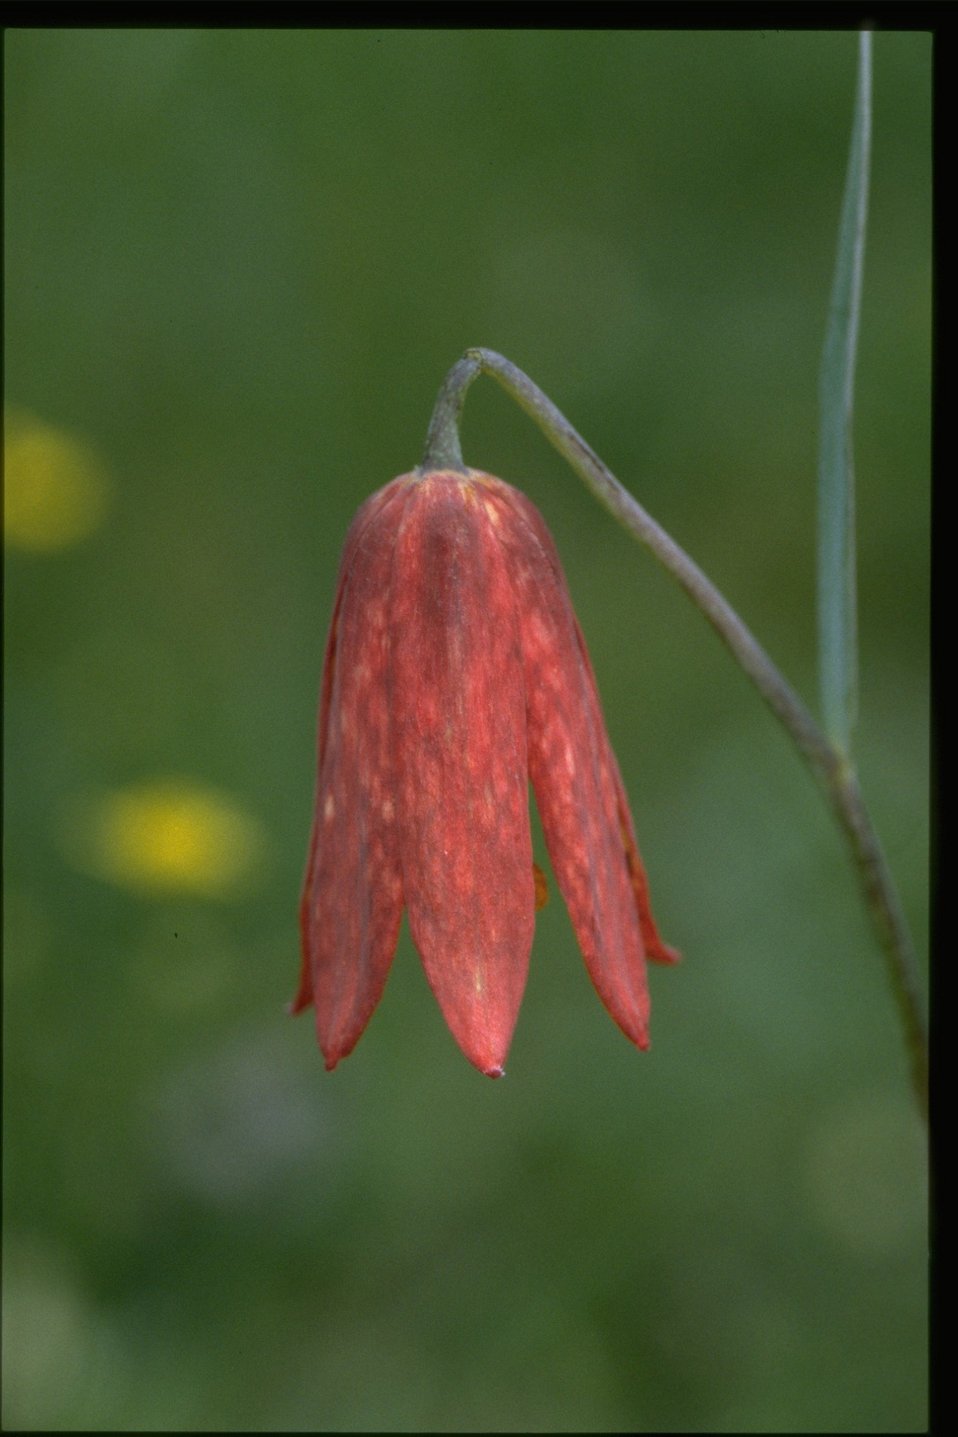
Closeup shot of Gentner's Fritillary, Fritillaria gentneri.